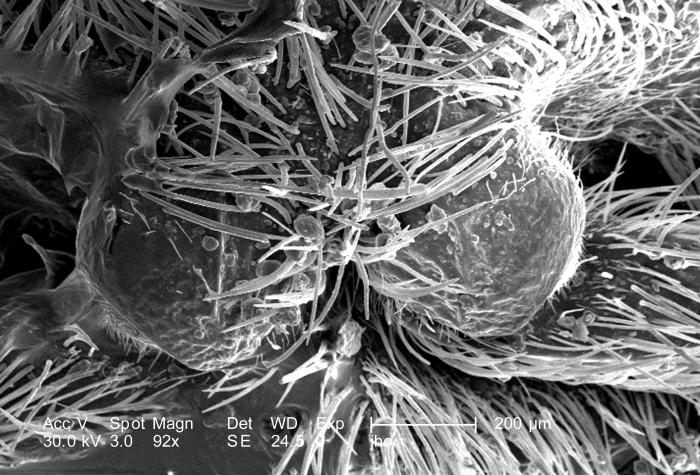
Double the magnification of PHIL 9898, at 92X, this scanning electron micrograph (SEM) showed the head region from an anterior view of a female velvet ant, Dasymutilla sp.. Note the two anteriorly-placed antennae with their rounded "scapes" that are the most apparent head appendages. Like the antennae, the numerous 'hairs' or setae adorning almost all of the insect's exterior surfaces, act as sensory structures, supplying the organism with information about its environmental parameters. The jointed legs, from which the insects Phylum Arthropoda is derived, i.e., Arthro = 'jointed', and poda 'leg', are also partially visible, emanating from the thoracic region.